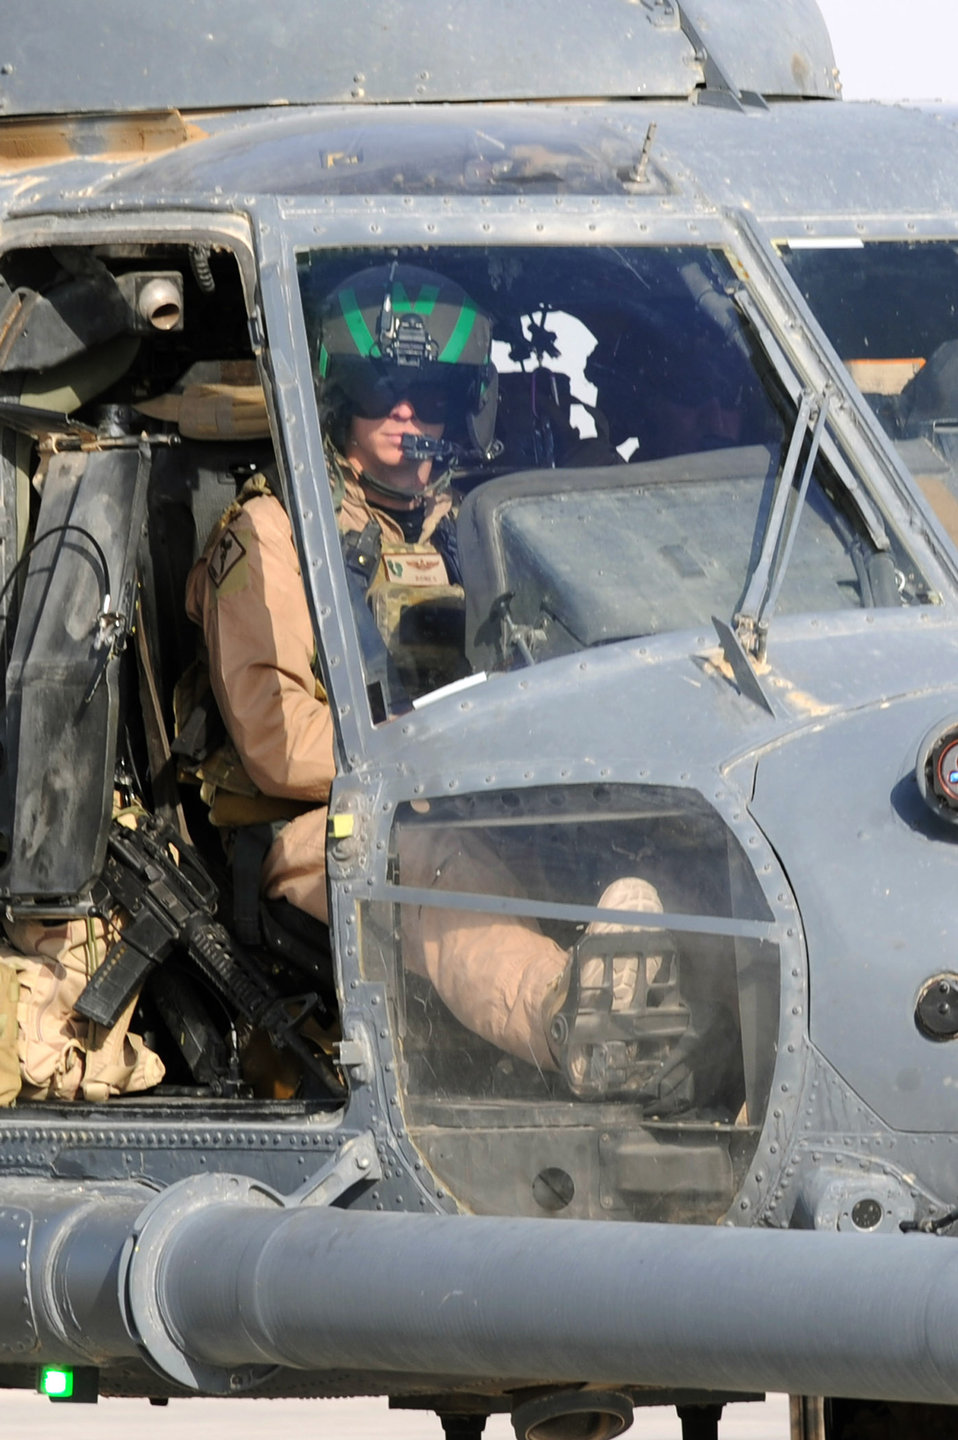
26th ERS

Maj. Russell Cook taxies an HH-60G Pave Hawk helicopter during a mission Oct. 1, 2010, at Kandahar Airfield, Afghanistan. Major Cook is a pilot with the 26th Expeditionary Rescue Squadron.